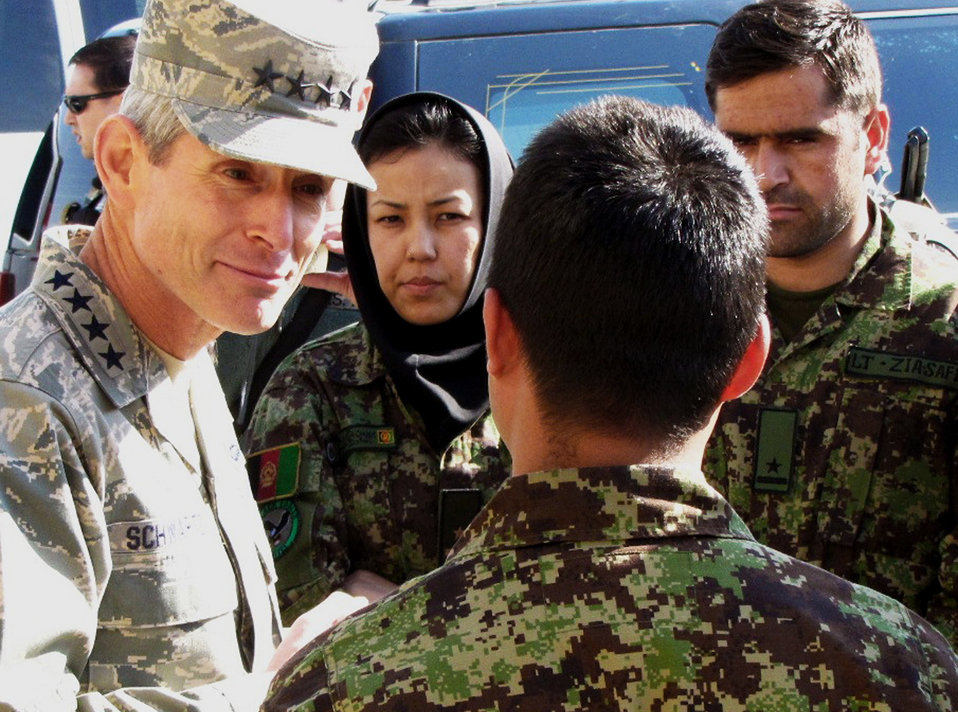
Air Force chief of staff visits Thunder Lab

Air Force Chief of Staff Gen. Norton Schwartz talks to members of the Afghan air force during a visit to the English immersion lab known as